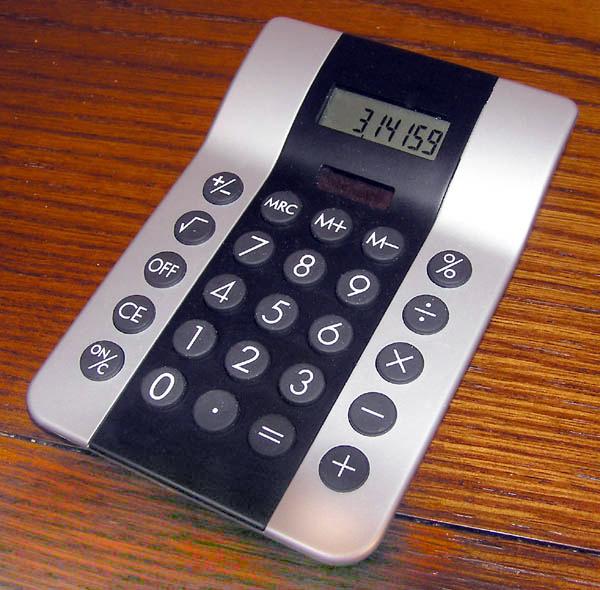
Calculator.kodabar